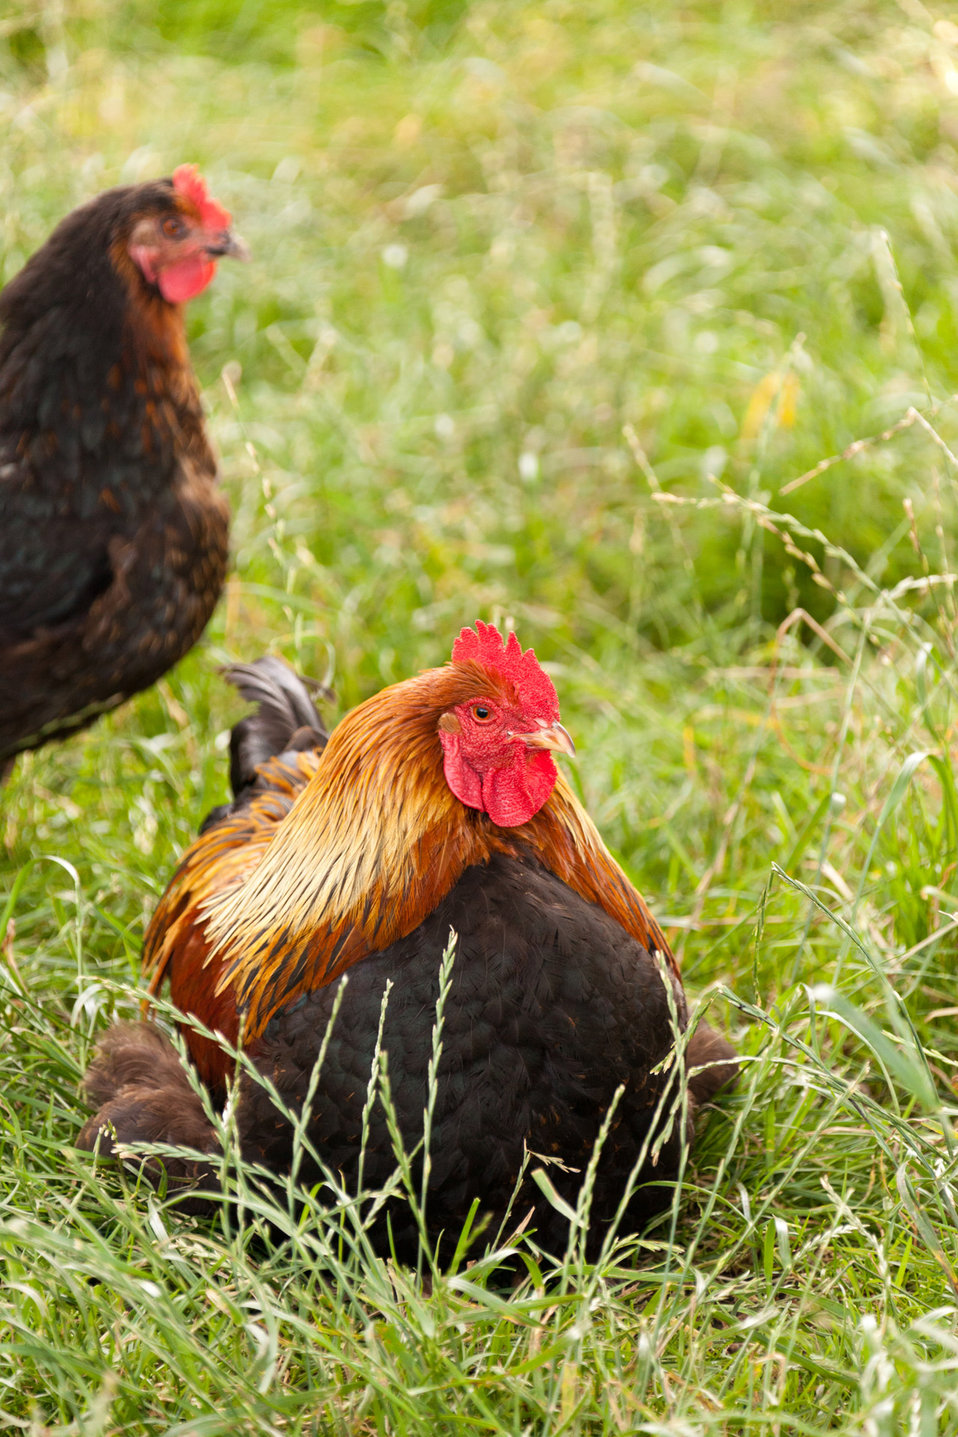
Rooster and hen on grass.